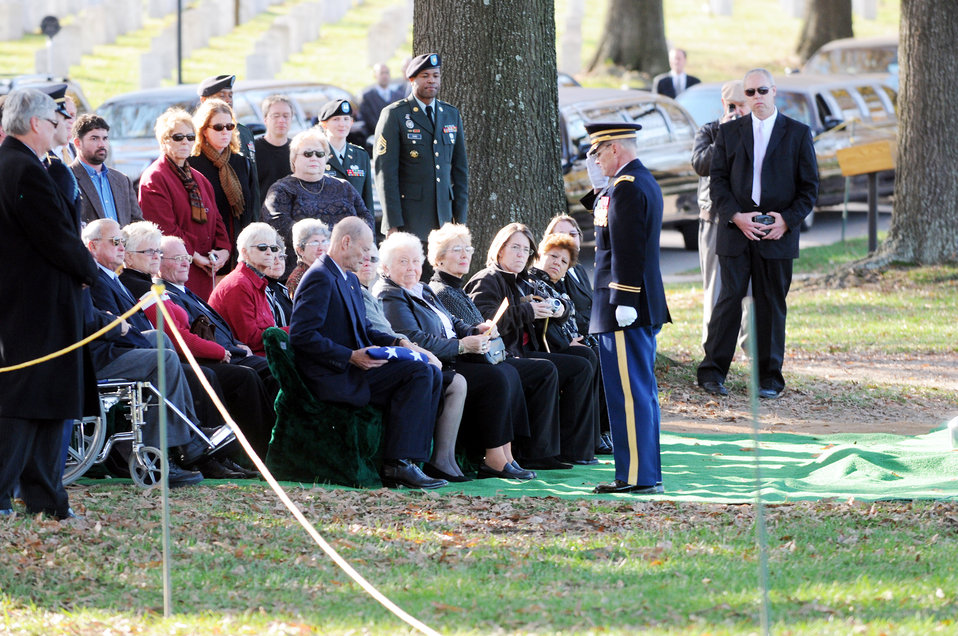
Funeral highlights search for missing servicemembers

A high ranking military official salutes a family member after presenting the American flag at an internment ceremony for seven members of the World War II B-25 aircrew that were lost Dec. 5, 1942, near Papua, New Guinea, at Arlington National Cemetery in Virginia Nov. 17, 2009.